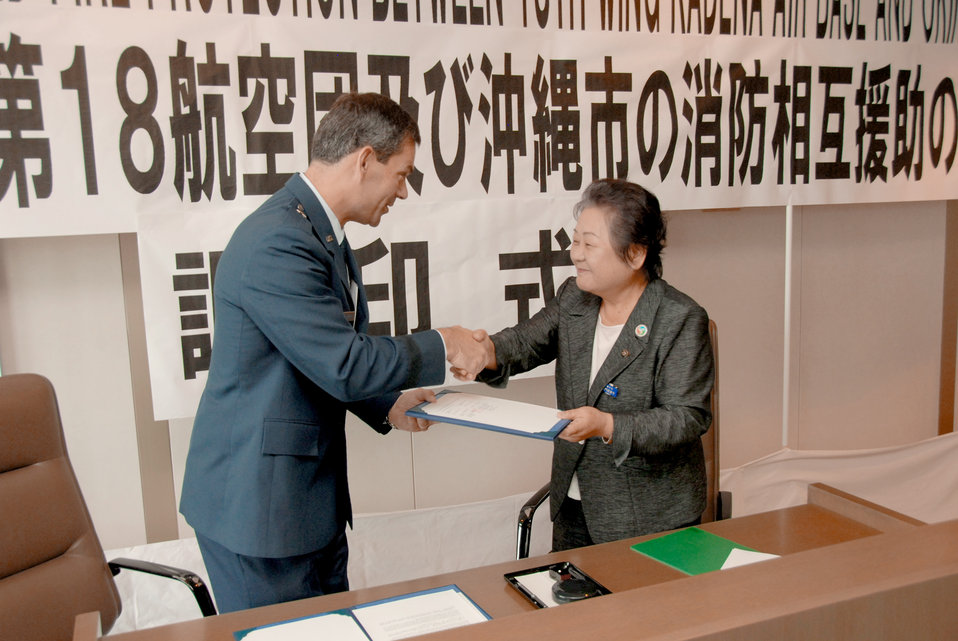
18th Wing, Okinawa City fire department cooperation

Brig. Gen. Ken Wilsbach and Mitsuko Tomon shake hands after signing a memorandum of understanding to formalize cooperation between their respective fire departments July 2, 2010, in Okinawa, Japan. The MOU establishes a framework for mutual aid in the case of fire emergencies. General Wilsbach is the 18th Wing commander. Ms. Tomon is the mayor of Okinawa City.